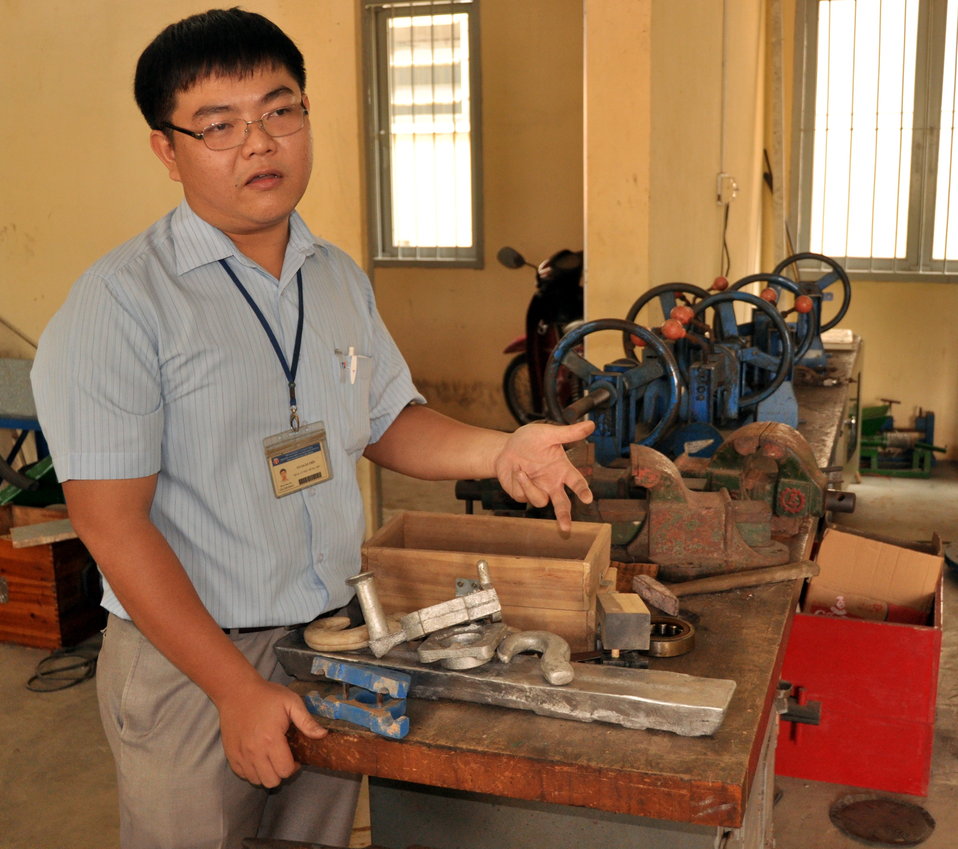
Ho Chi Minh City University of Technical Education, HEEAP Partner

Lecturer Vo Xuan Tien
January 12, 2013